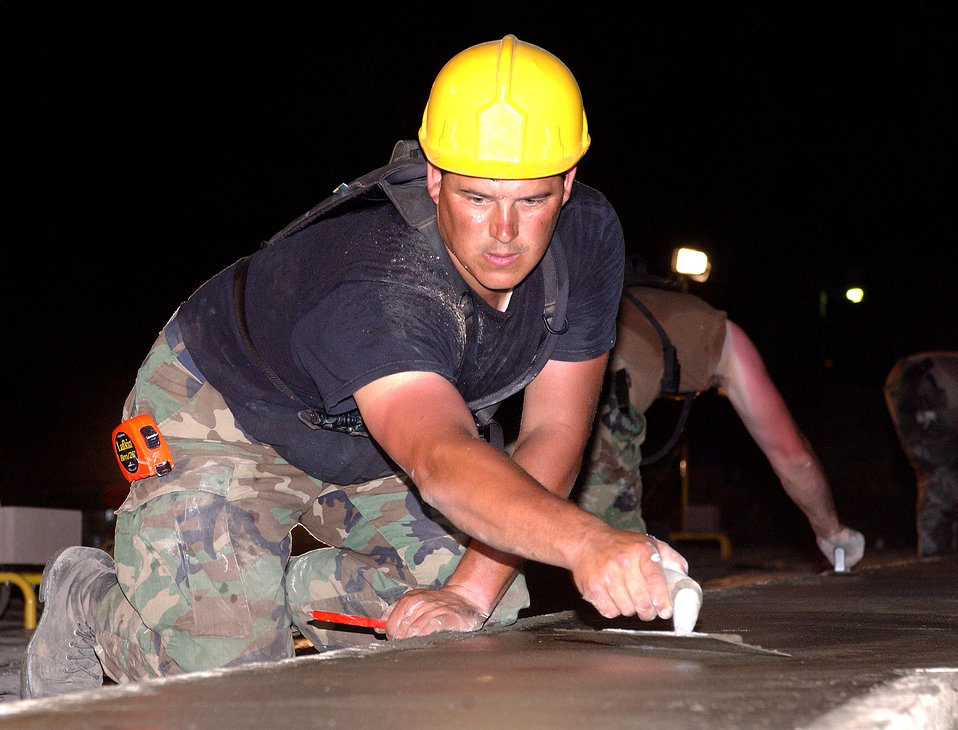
Airmen venture to New Horizons

LAS FLORES, El Salvador -- Master Sgt. Don Hawk uses a hand trowel to finish part of a concrete foundation for a school here. Reserve civil engineers from Wright-Patterson Air Force Base, Ohio, are deployed to New Horizons 2005, a readiness training exercise providing humanitarian-assistance projects to help citizens of El Salvador. The exercise hones the Airmen's skills as they build schools, clinics and other projects. Sergeant Hawk is assigned to the 445th Civil Engineer Squadron.